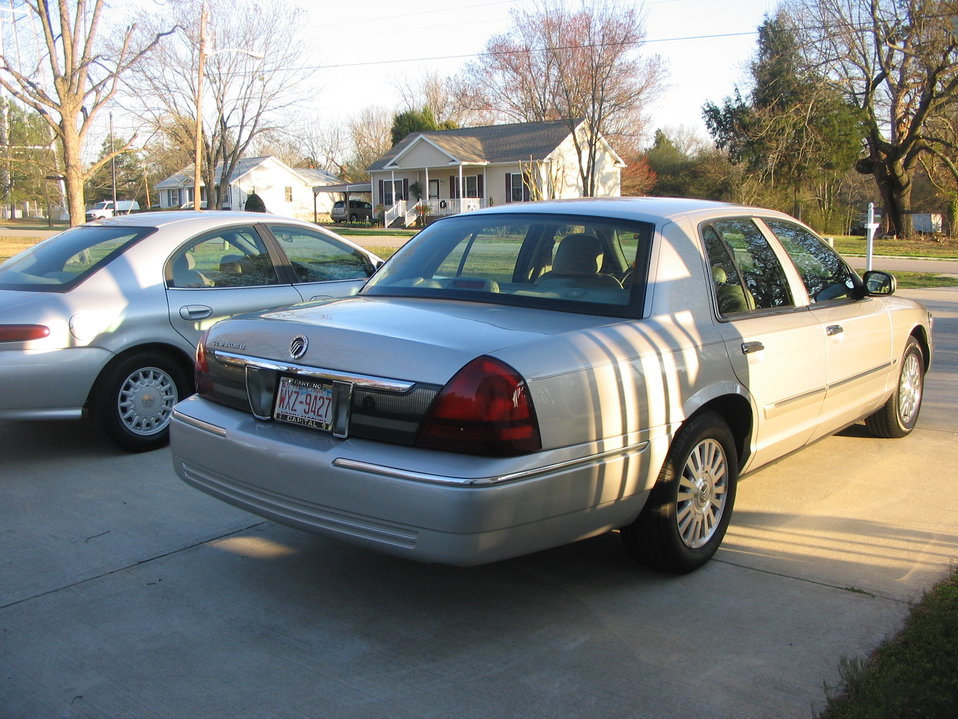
en:Category:Images of automobiles